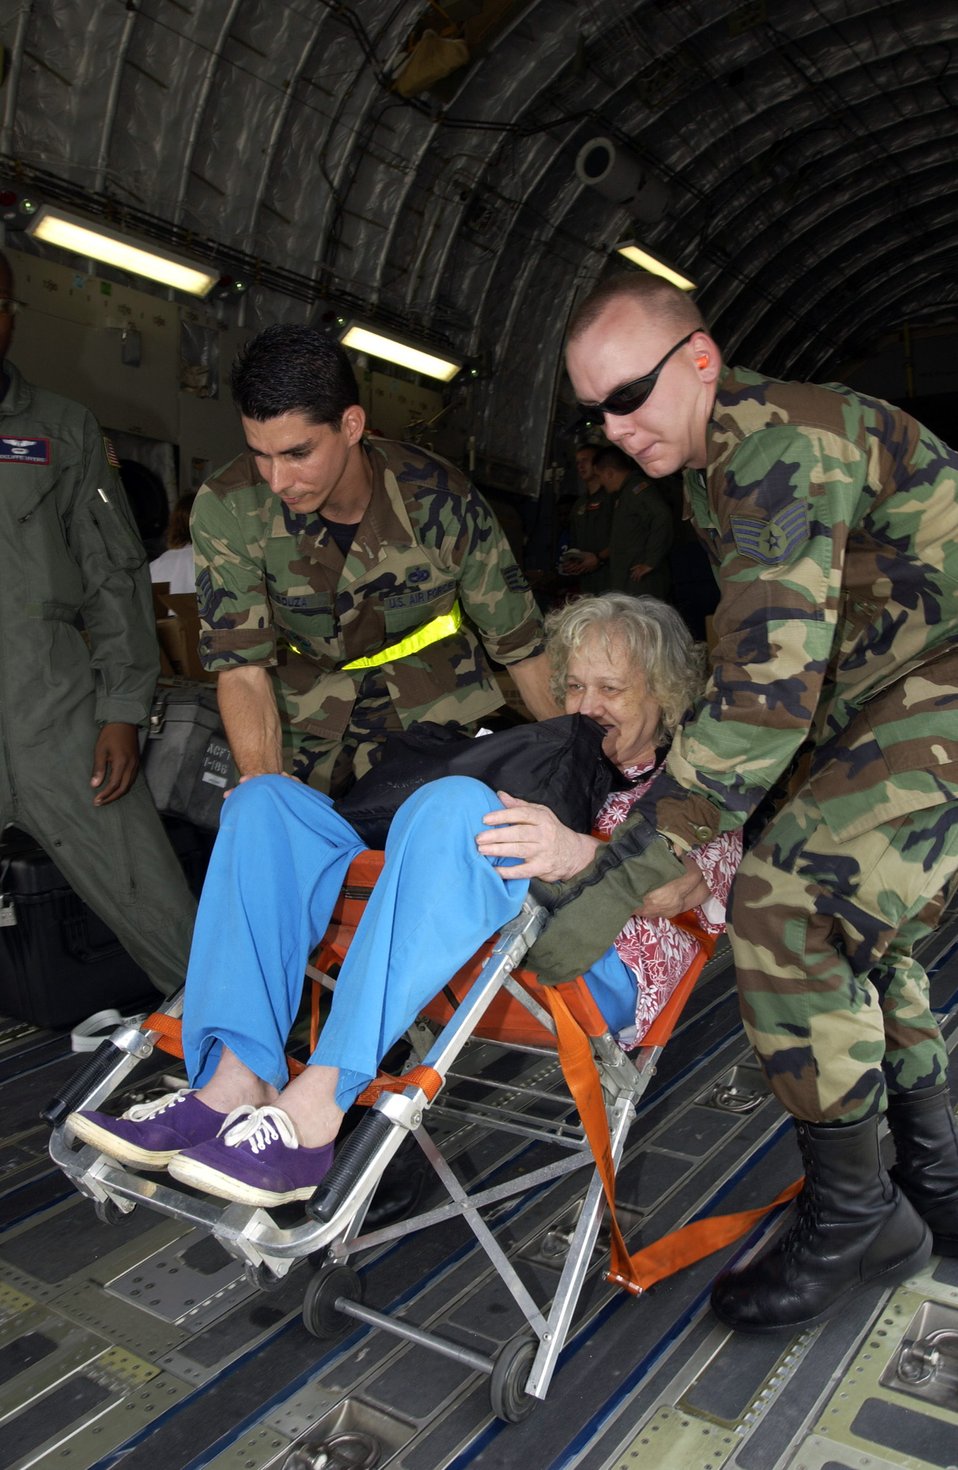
Aeromedical evacuation hub established at Lackland

LACKLAND AIR FORCE BASE, Texas -- Staff Sgt. John Souza (left) and Staff Sgt. Michael Vonahmen (right), help Hurricane Katrina evacuees get off a C-17 Globemaster III here. The evacuees arrived Sept. 2 from New Orleans. They are being inprocessed, given a medical checkup, fed and put into temporary shelters. The Airmen are assigned to the 343rd Training Squadron.